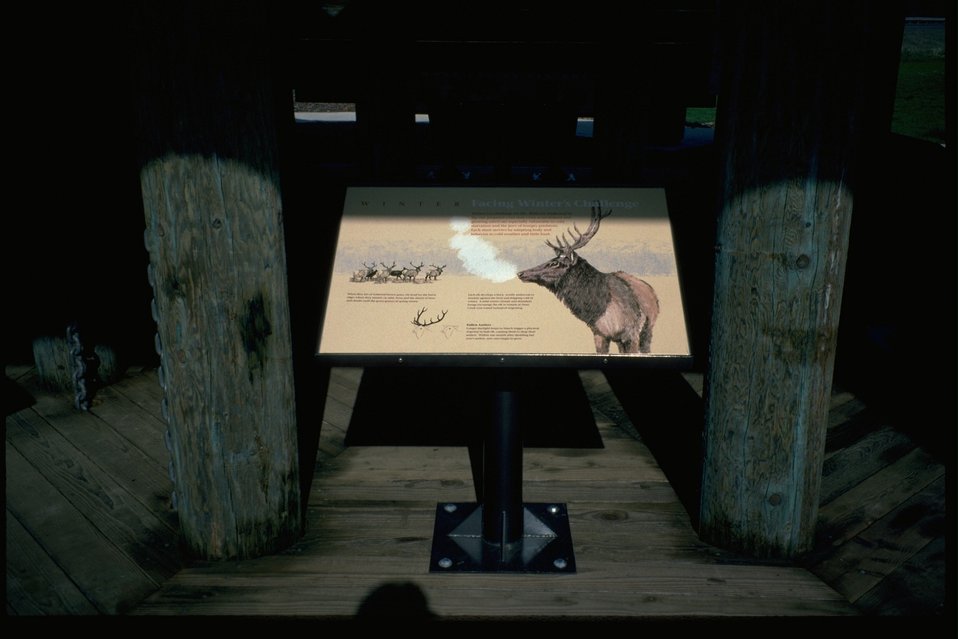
Interpretive panel kiosk: "Facing Winter's Challenge.